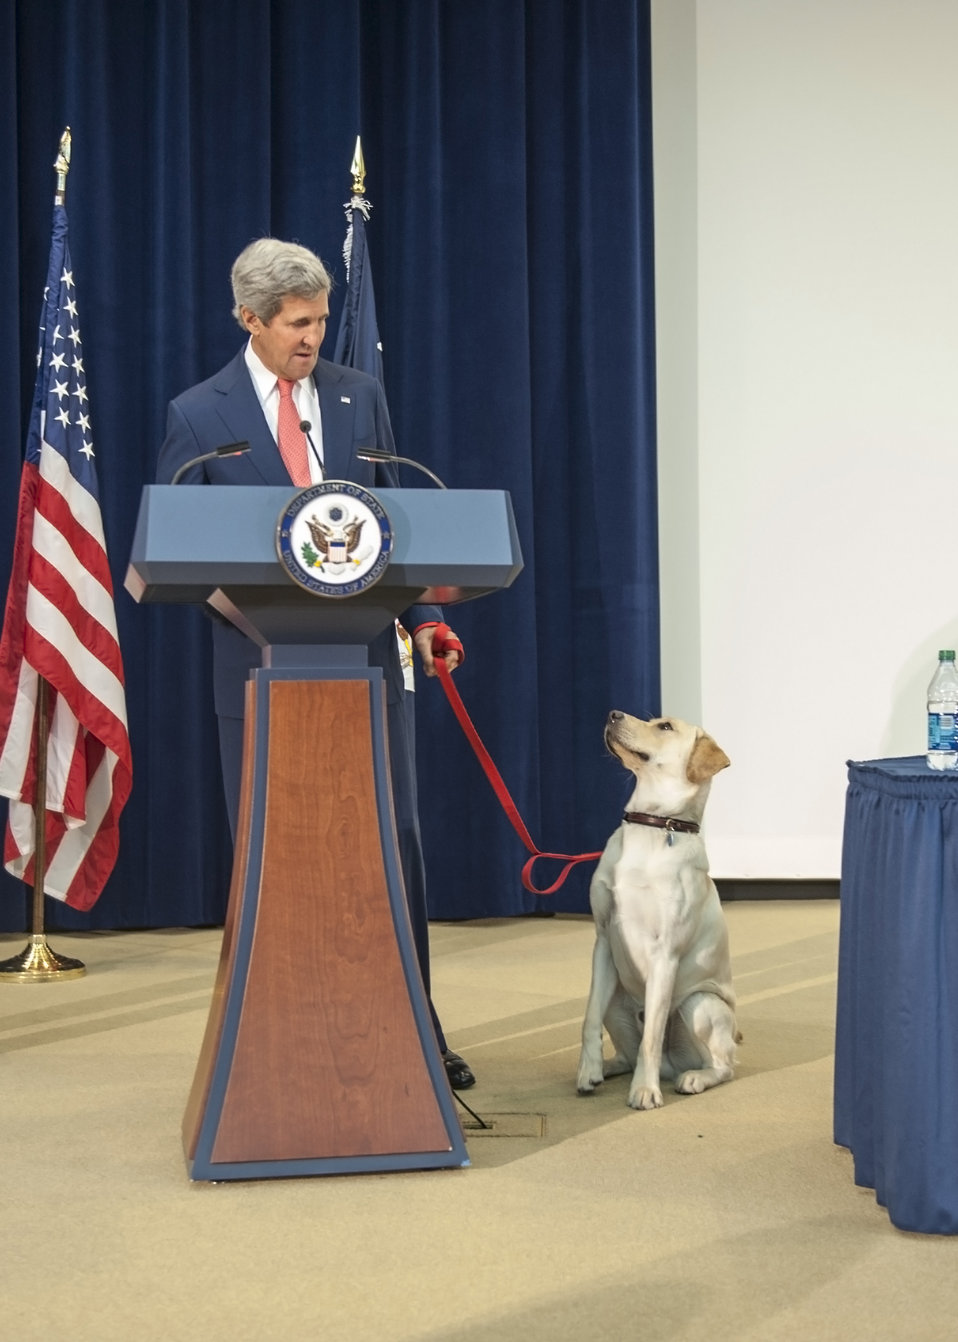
Secretary Kerry Introduces Ben to Children at Take Your Child to Work Day

U.S. Secretary of State John Kerry introduces his beloved dog Ben to children at the U.S. Department of State's annual Take Your Child to Work Day Event in Washington, D.C., on April 24, 2014.